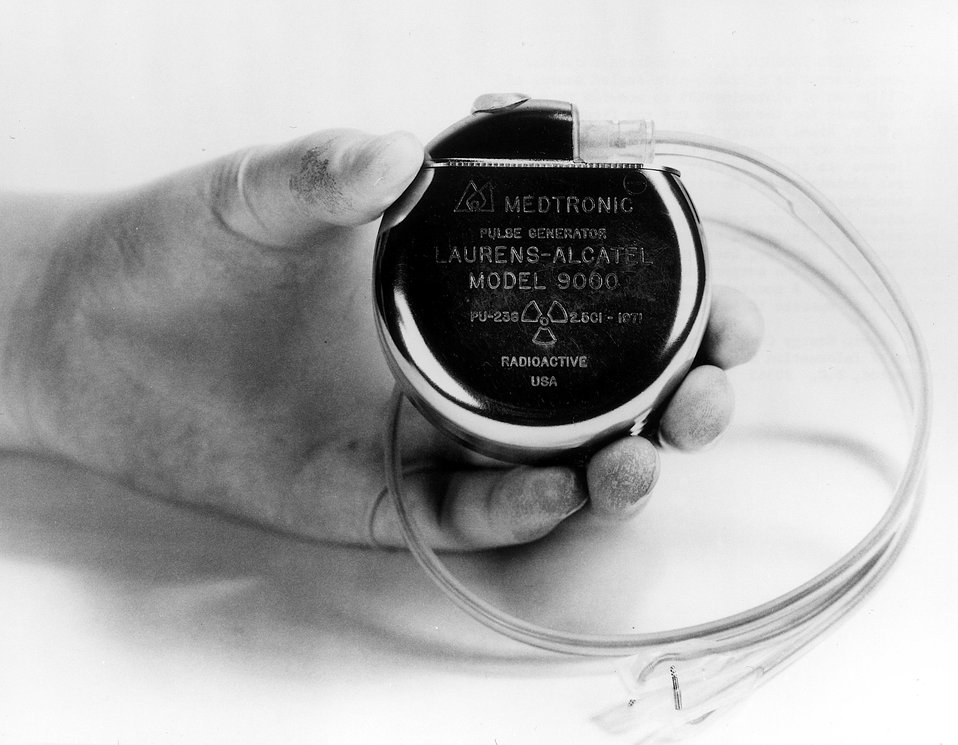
The Medtronic cardiac pacemaker containing a French-made sealed source of 150 milligrams of plutonium-238 to provide thermoelectric power for the device was the first licensed to be implanted in humans for the purpose of clinical evaluation. The license was issued in July of 1972 to the Veterans Administration Hospital, Buffalo, N.Y. for ten pacemakers. Circa 1973.